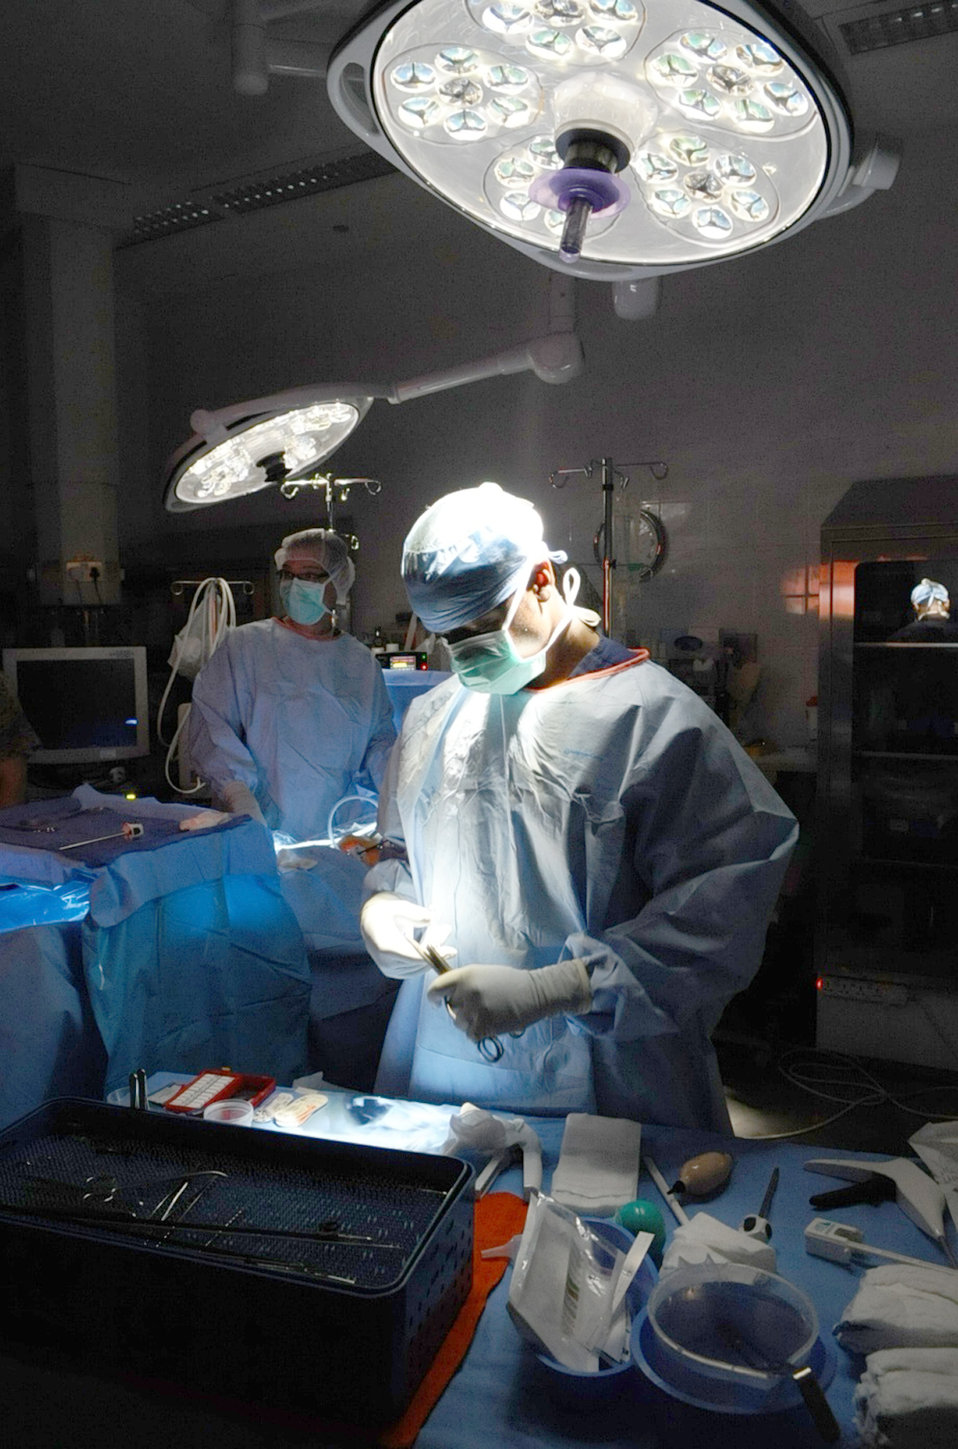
In-theater medcal treatment

Staff Sgt. Jeron Lowery cleans and prepares medical equipment for surgeons during a hernia surgery June 9, 2010, at an air base in Southwest Asia. Sergeant Lowery is a 379th Expeditionary Medical Group surgery technician.